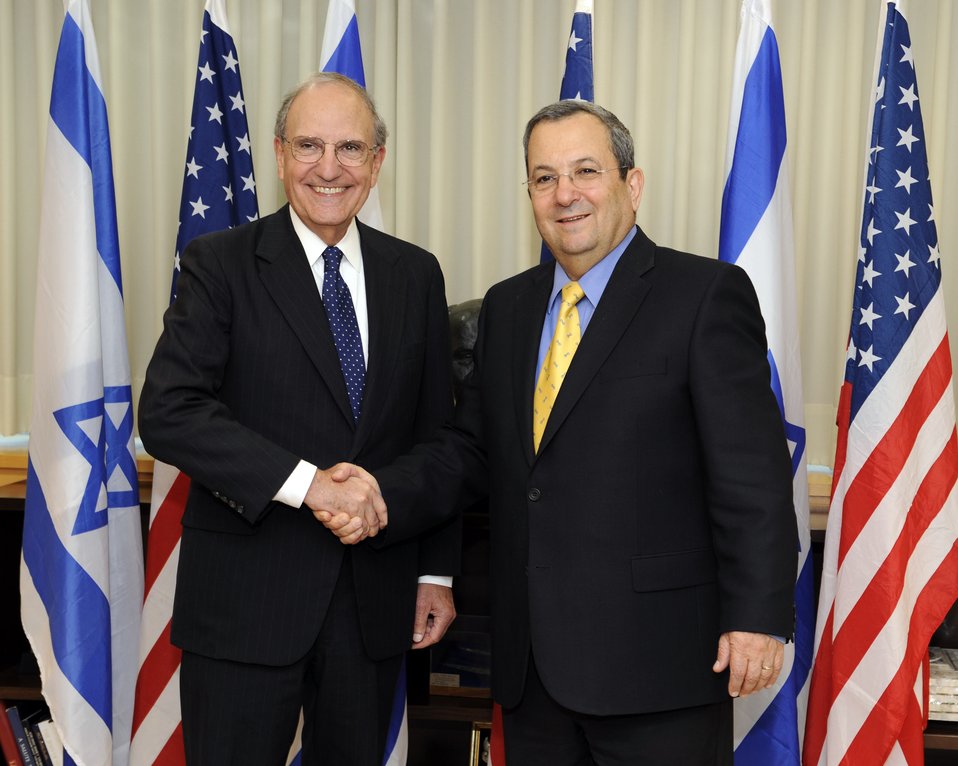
U.S. Special Envoy George Mitchell Meets With Israeli Defense Minister

U.S. Special Envoy George Mitchell with Israeli Minister of Defense Ehud Barak before their meeting in Tel Aviv, Israel July 26, 2009.